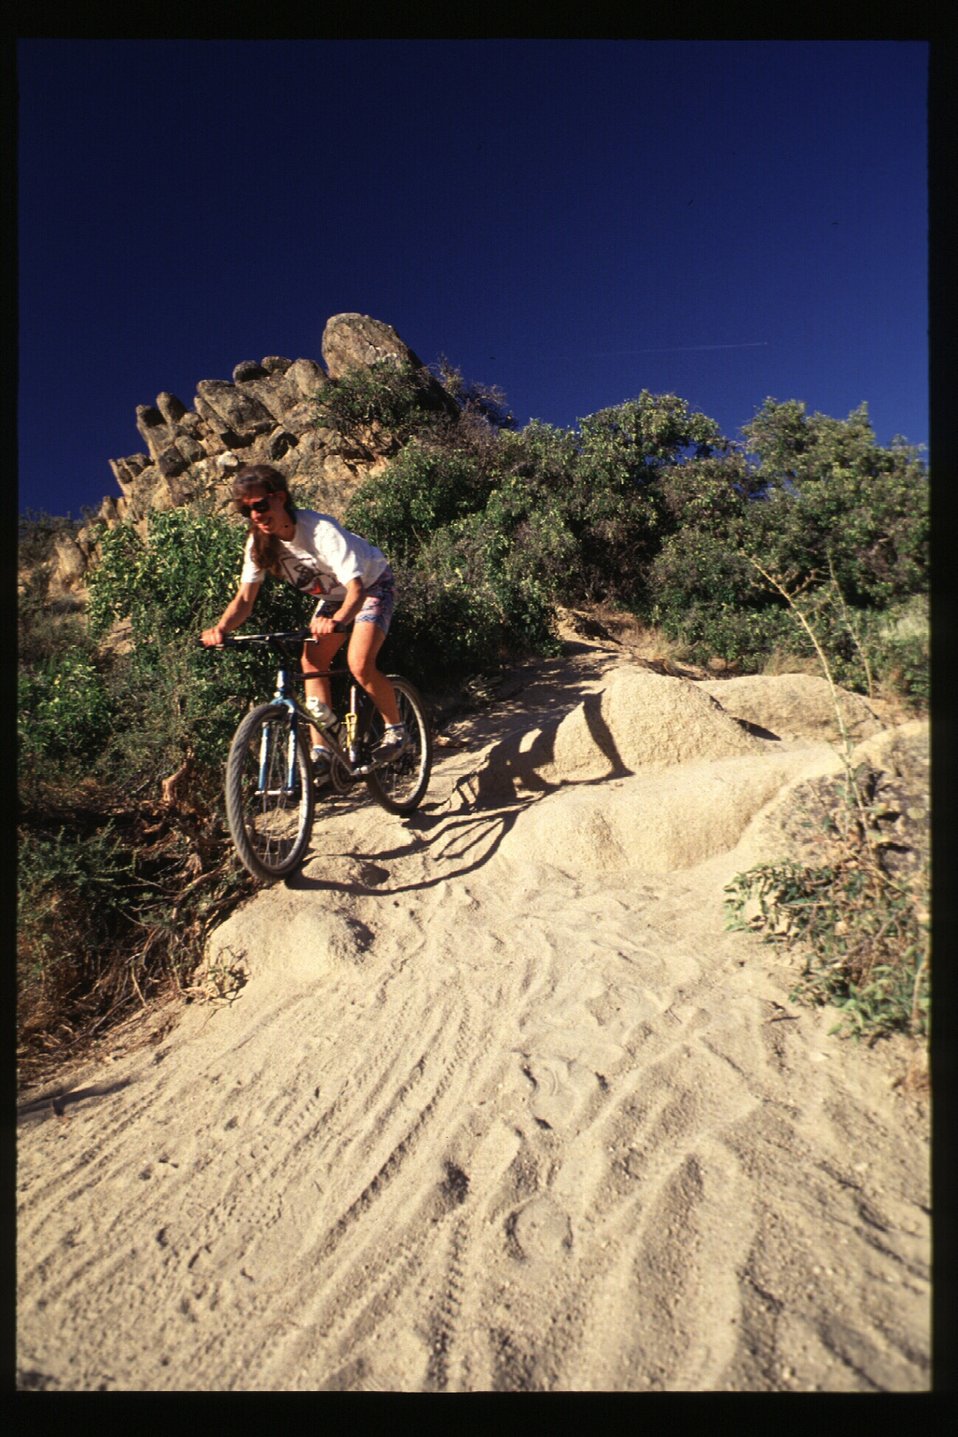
Recreation Scenic Biker Shoshone Field Office USRD Upper Snake River District